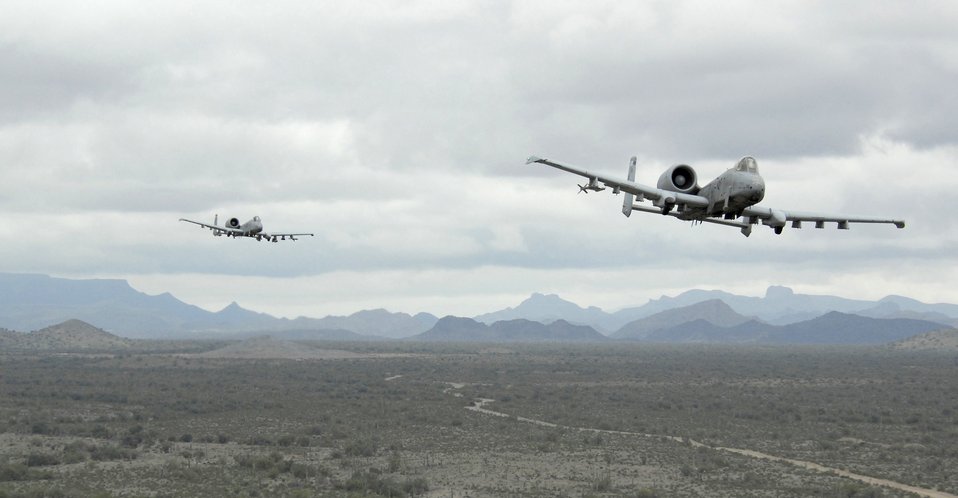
New wings to secure A-10 longevity

A-10 Thunderbolt IIs from the 354th Fighter Squadron at Davis-Monthan Air Force Base, Ariz., fly a training mission over the Berry Goldwater Range in Arizona.